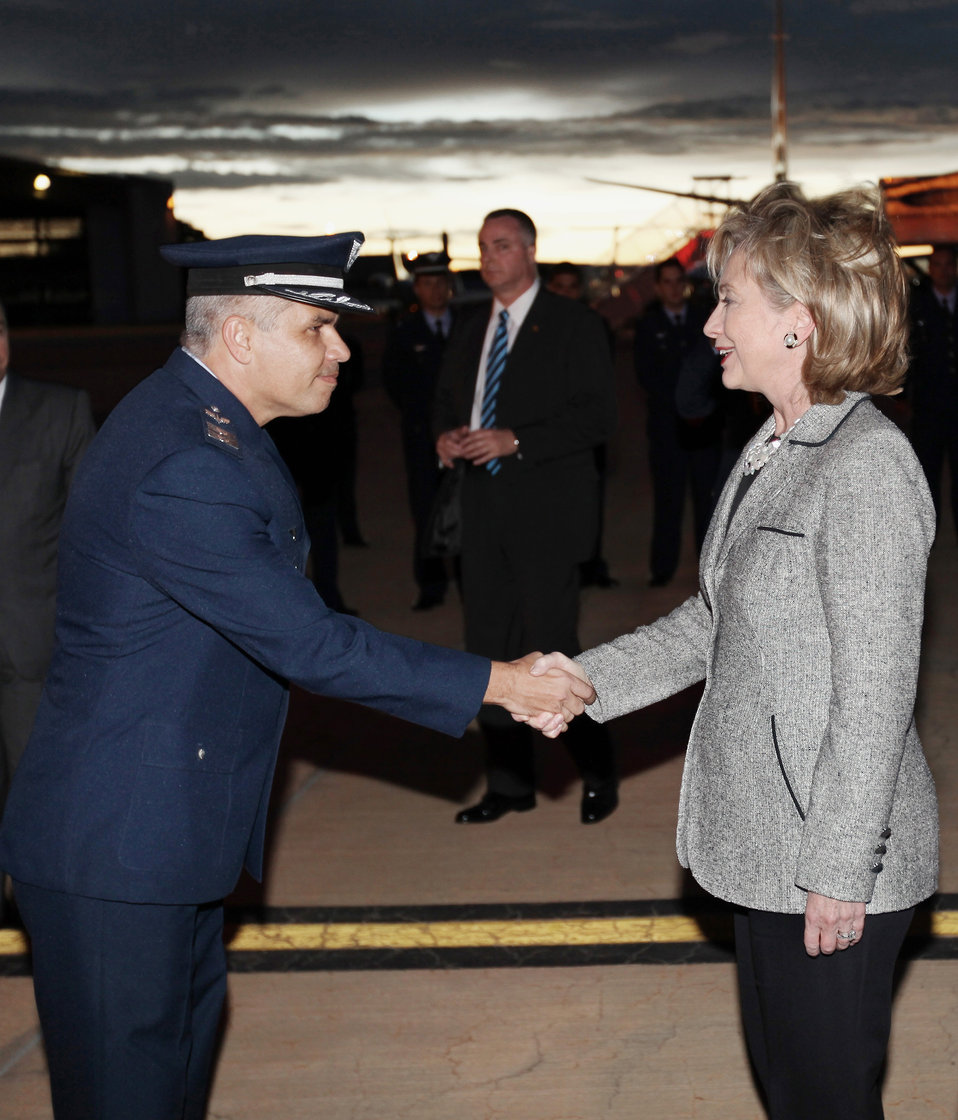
Secretary Clinton Greets Brazilian Air Base Colonel

U.S. Secretary of State Hillary Rodham Clinton greets Air Base Colonel Maxneif Cabral Mendes de Castro in Brasilia, Brazil March 2, 2010.